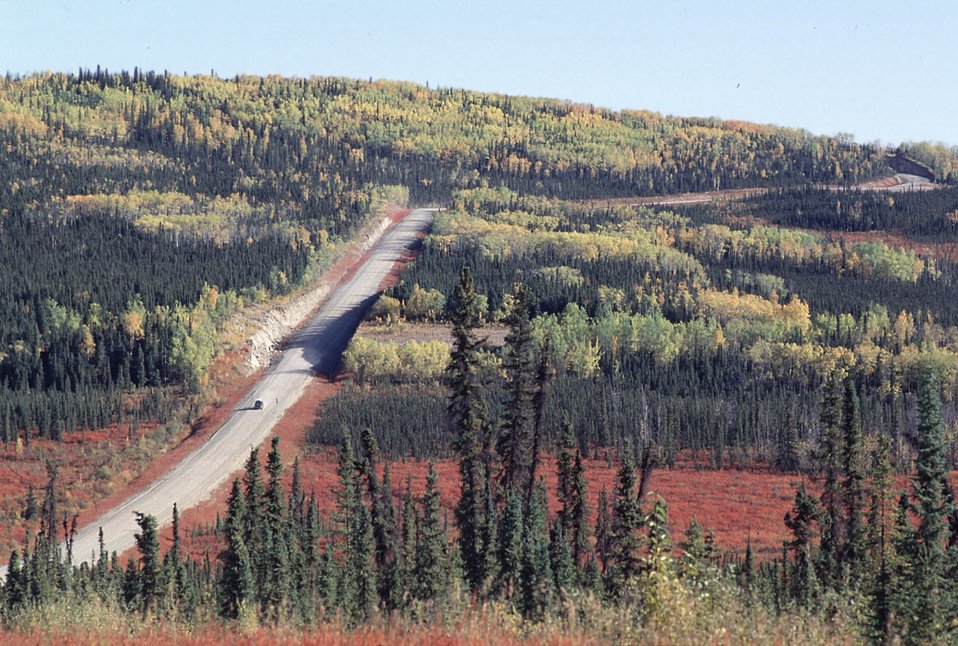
Fall colors along Taylor Highway